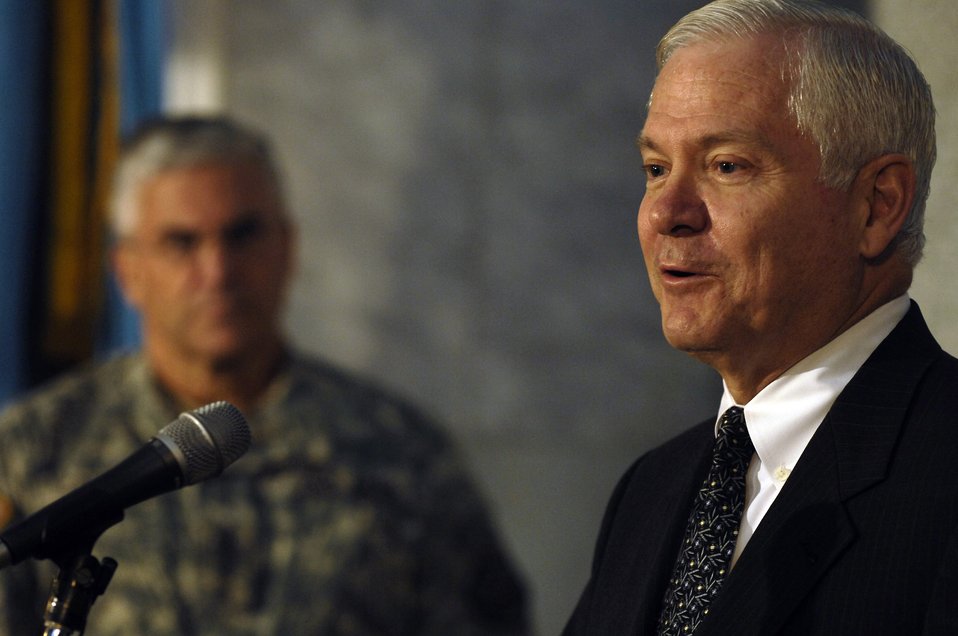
Gates urges Americans to remember servicemembers

Secretary of Defense Robert M. Gates conducts a press conference as U.S. Army Gen. George W. Casey Jr., commander of Multi-National Force - Iraq, looks on in Baghdad, Iraq, Dec. 20, following a meeting with top generals.